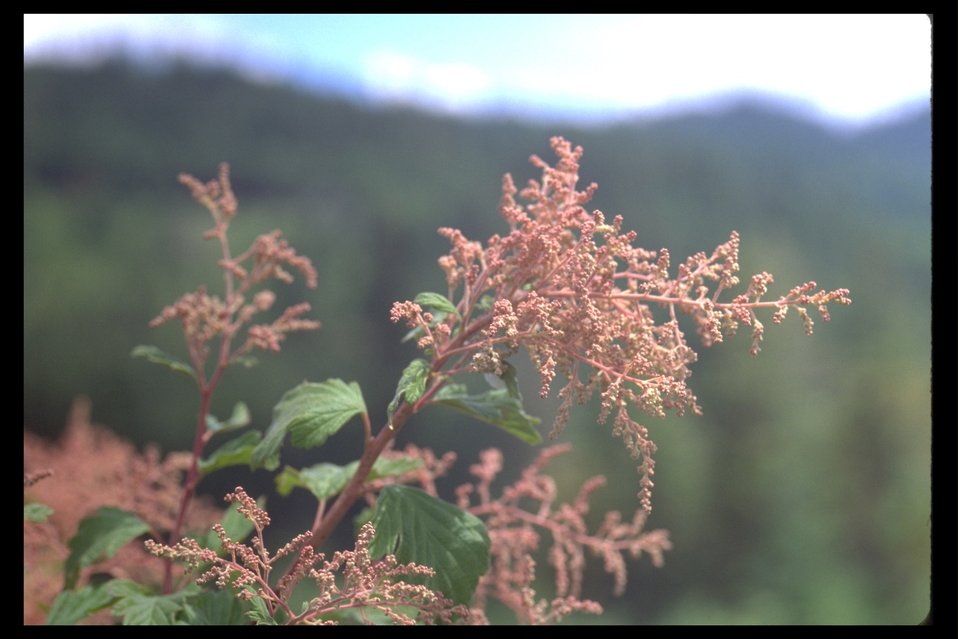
Blosssom on the Oceanspray (Holodiscus discolor) at Upper Trail Creek.